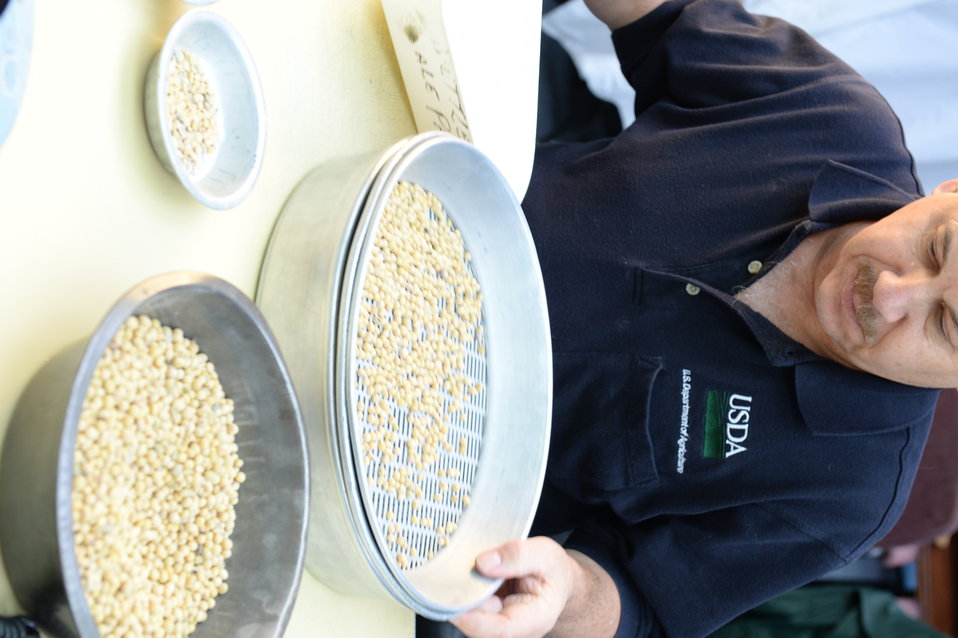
U.S. Department of Agriculture (USDA) Grain Inspection, Packers and Stockyards Administration (GIPSA) Federal Grain Inspection Service (FGIS) employee examines grain samples at the FGIS inspection laboratory in New Orleans, LA on Monday, Nov. 18, 2013.